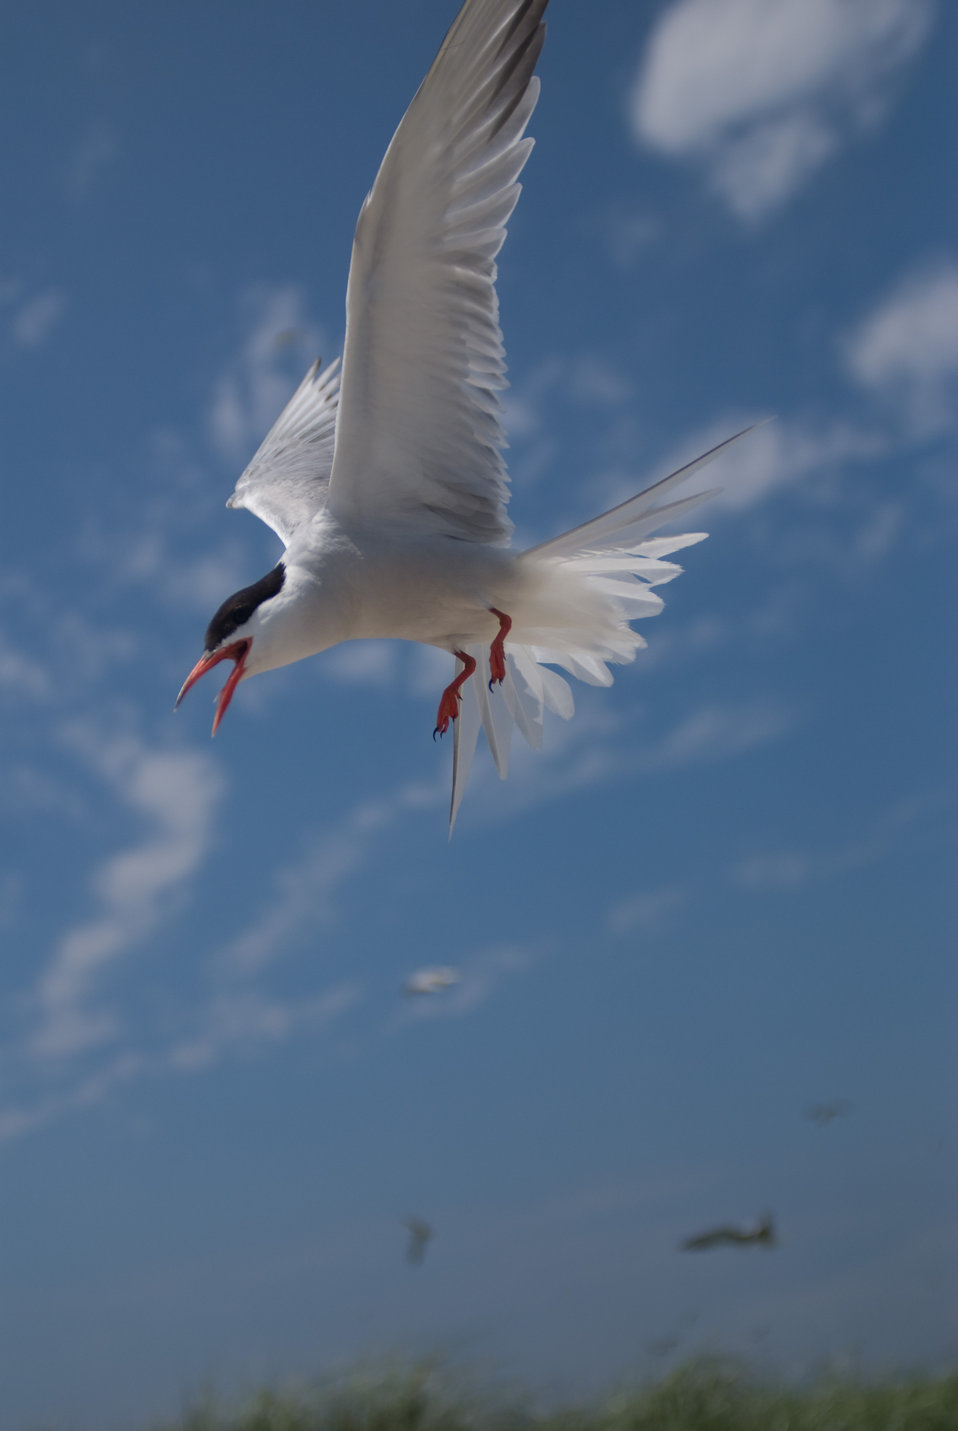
Photo of the Week - Tern at Monomoy National Wildlife Refuge, MA

Photo of the Week - 08/02/2010

A tern at Monomoy National Wildlife Refuge in Massachusetts.